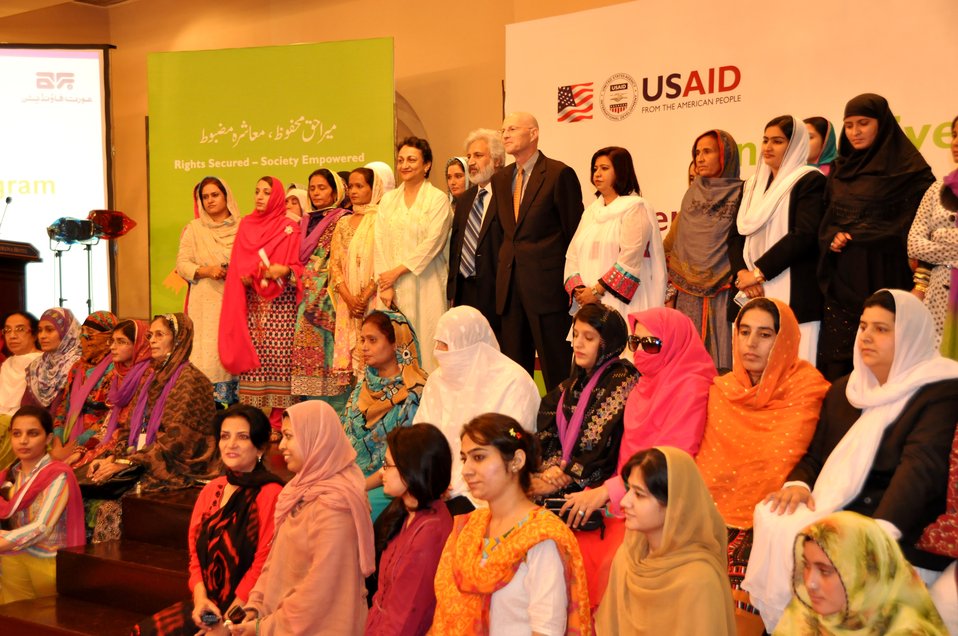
Annual Event- Gender Equity Program titled as “Rights Secured – Society Empowered”